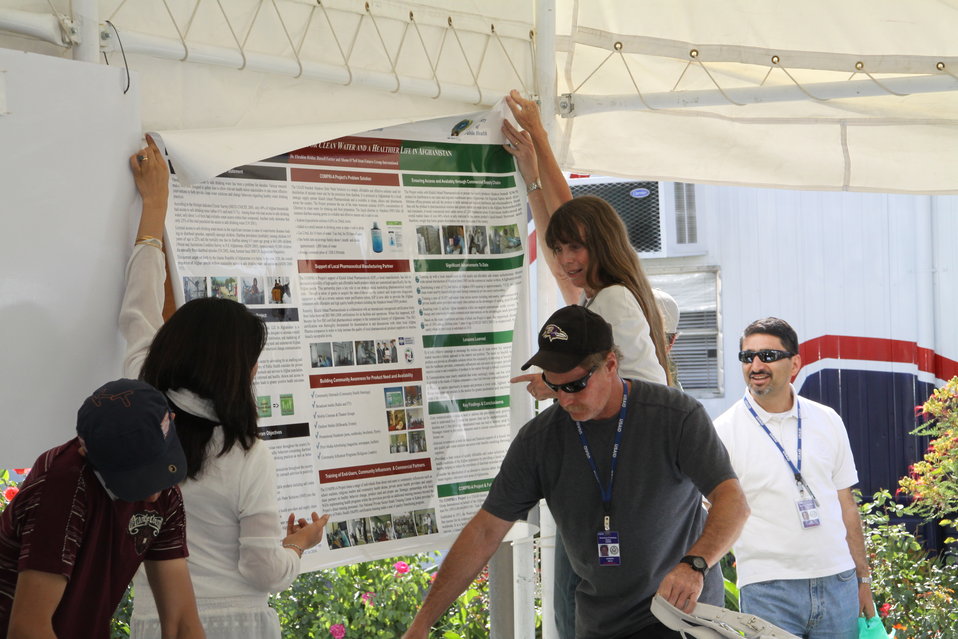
Official July 4th Event Preparation